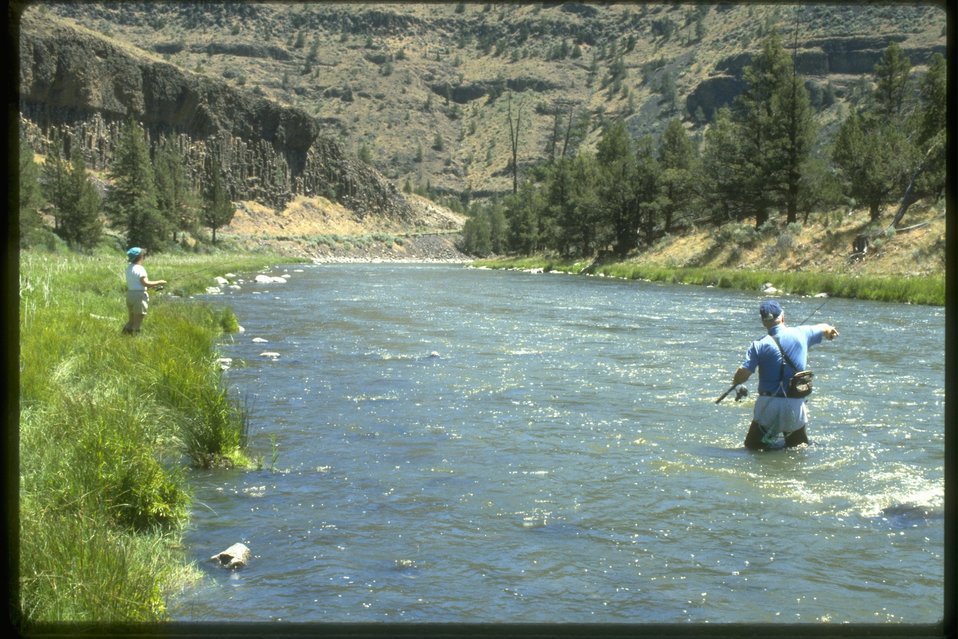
Fishermen in the river.